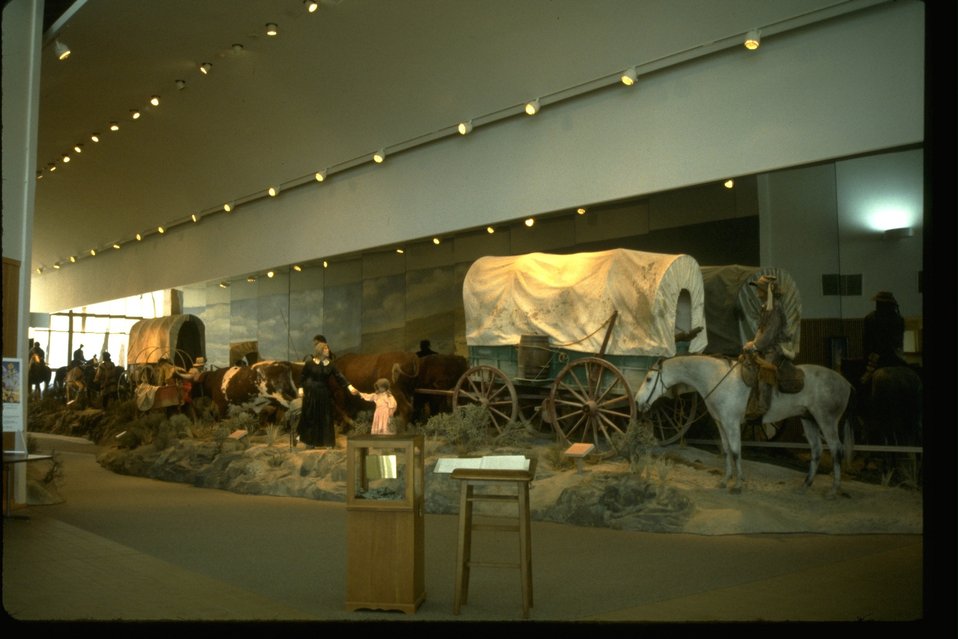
Orientation Gallery of the NHOTIC.